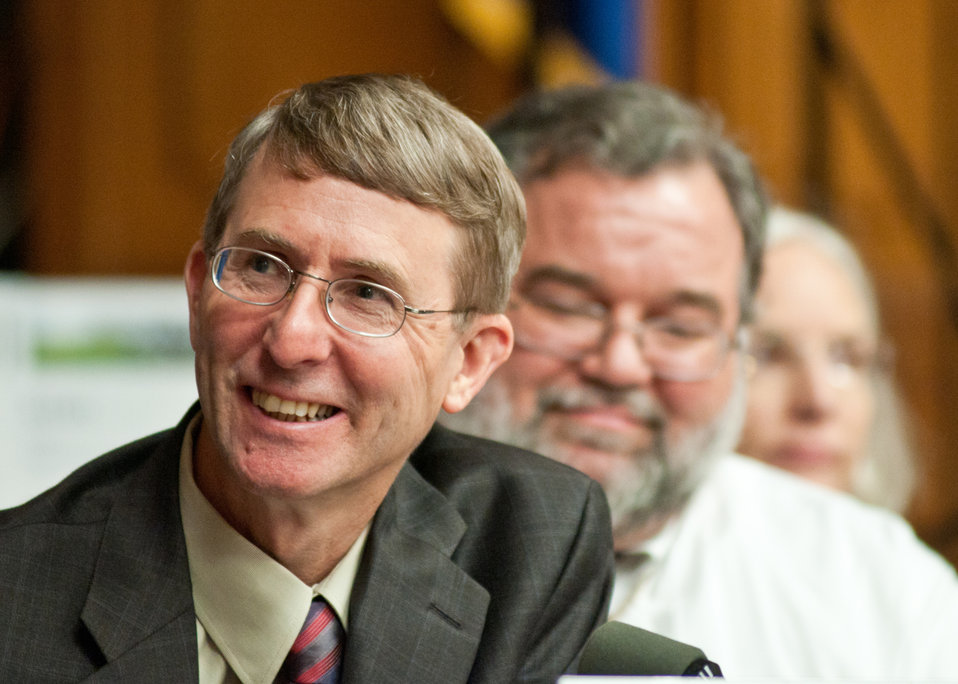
Miles McEvoy, Deputy Administrator, National Organic Program, Steven Smith, National Program Leader, National Institute of Food and Agriculture and Ann Mills, Deputy Undersecretary, Natural Resources and Environment listen to stakeholders and members of the public during the USDA Activities and Priorities Related to Organic Agriculture and Markets Public Listening Session held at the U.S. Department of Agriculture, in Washington DC, Tuesday, September 20, 2011. The purpose of the event was to gain the perspective of stakeholders and members of the public, important tools to help USDA Programs examine and prioritize their activities and objectives in order to best serve the organic community.